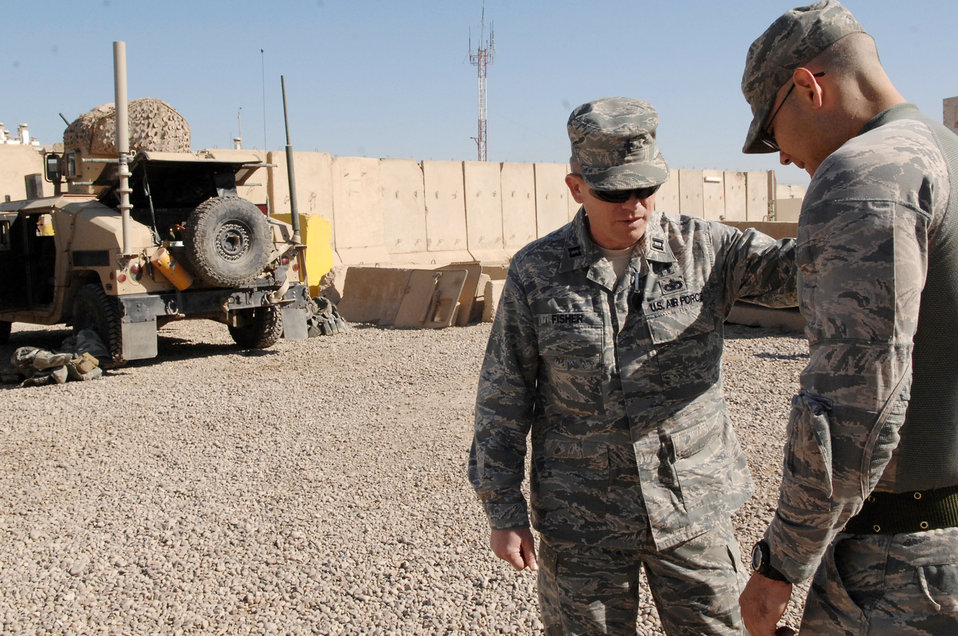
Chaplain provides ministry to Airmen in combat area

Chaplain (Capt.) Steve Fisher prays with Staff Sgt. Thomas Bonte March 22, 2010 before a mission outside Camp Stryker, Iraq. Chaplain Fisher is the 732nd Air Expeditionary Group chaplain. Sergeant Bonte is a 732nd AEG Security Forces Squadron vehicle driver.